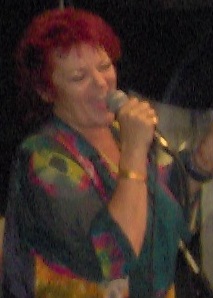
Dana Gillespie. Taken by Rod Ward at Trowbridge Village Pump Festival. 22nd July 2006.